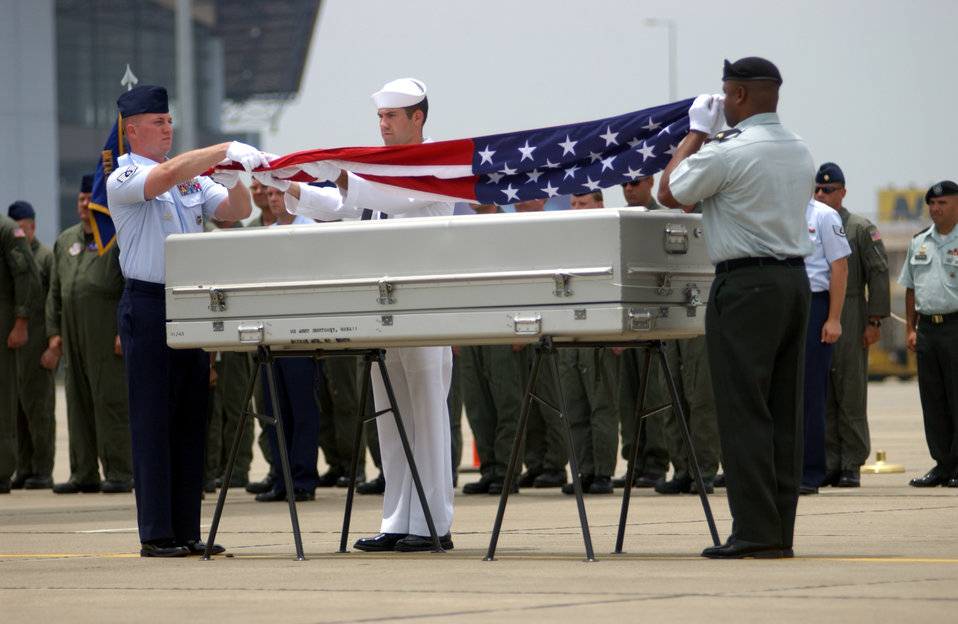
Airmen pay respect during repatriation ceremony

ANDERSEN AIR FORCE BASE, Guam -- Honor Guard members from the Joint POW/MIA Accounting Command drape an American flag over the remains of one of two servicemembers repatriated from Hanoi, Vietnam, on May 28. Airmen of the 445th Airlift Wing and Maj. Gen. Ed Mechenbier, the last Airman still serving who was a prisoner of war in Vietnam, flew the Hanoi Taxi to bring their fallen comrades home. The Hanoi Taxi became the first C-141 Startlifter to repatriate American POWs from Vietnam on Feb. 12, 1973.